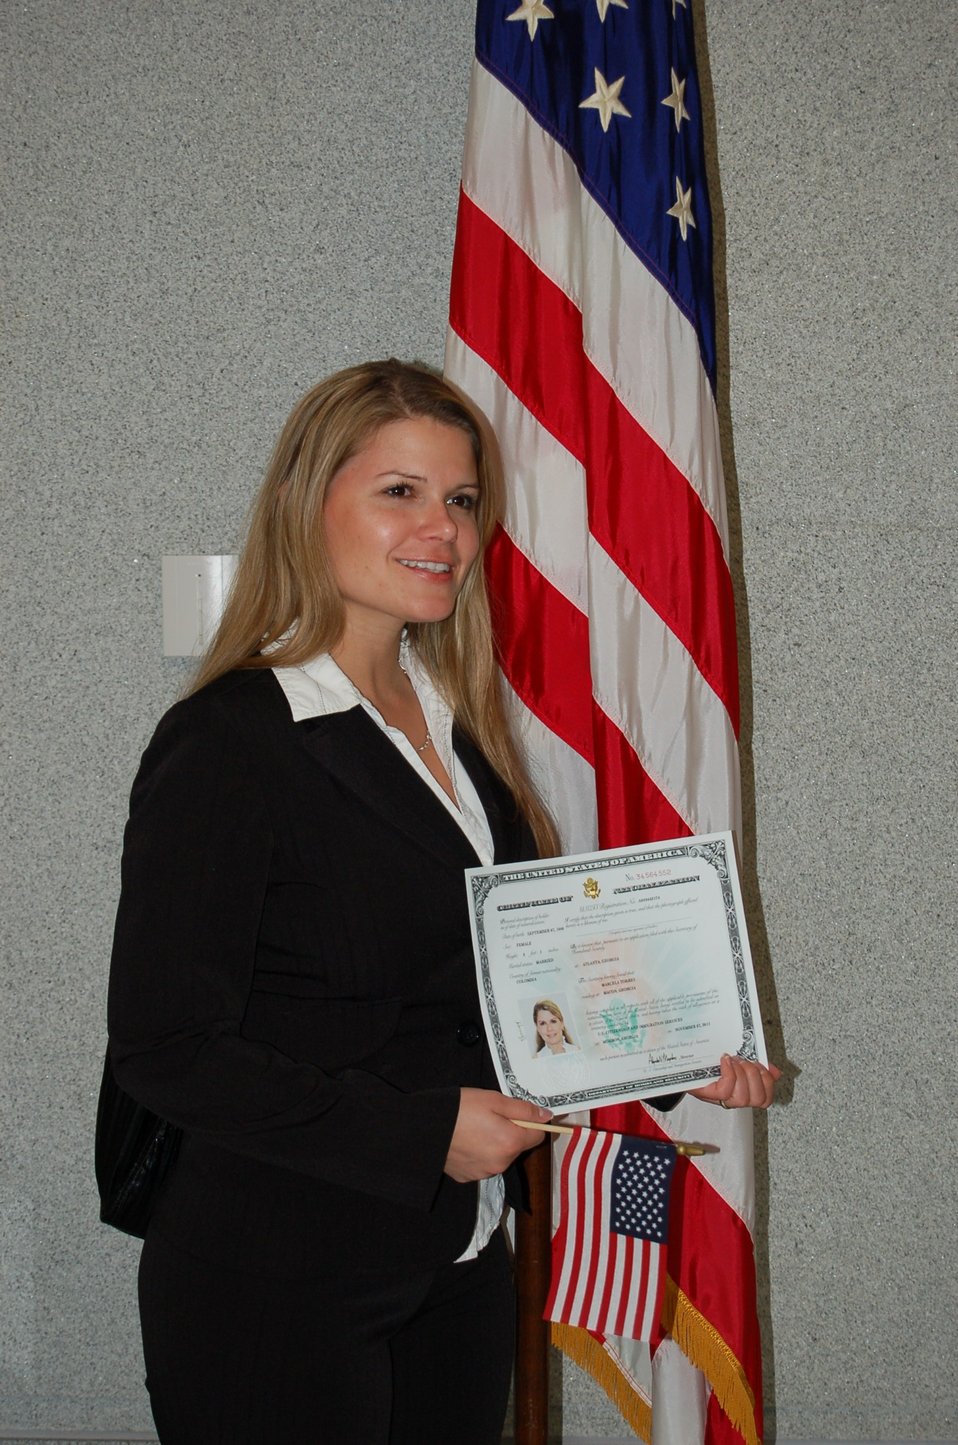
New Citizens